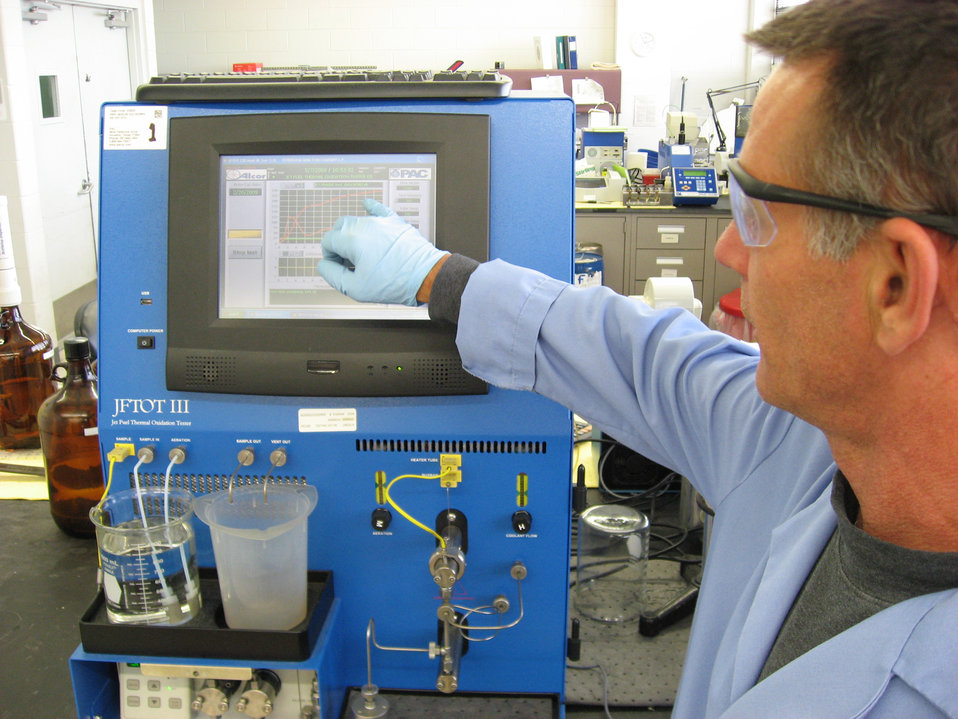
Officials test commercial fuel to replace JP-8 fuel

Mike Thiede uses a jet fuel thermal oxidation tester to test samples of commercial Jet A fuel in a lab at Wright-Patterson Air Force Base, Ohio. Air Force Petroleum Agency researchers have launched an initiative to evaluate the use of commercial jet fuel in place of military standard JP-8 fuel. Mr. Thiede is a a fuels quality assurance specialist with the Aerospace Fuels Laboratory at Wright-Patterson AFB.